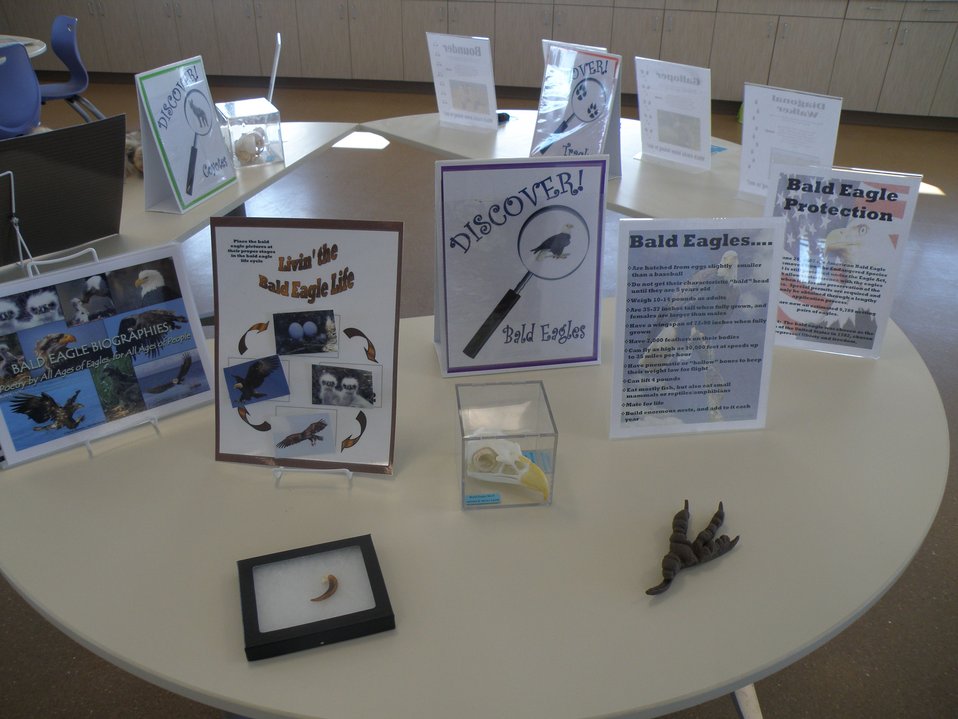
Discovery Room Eagles